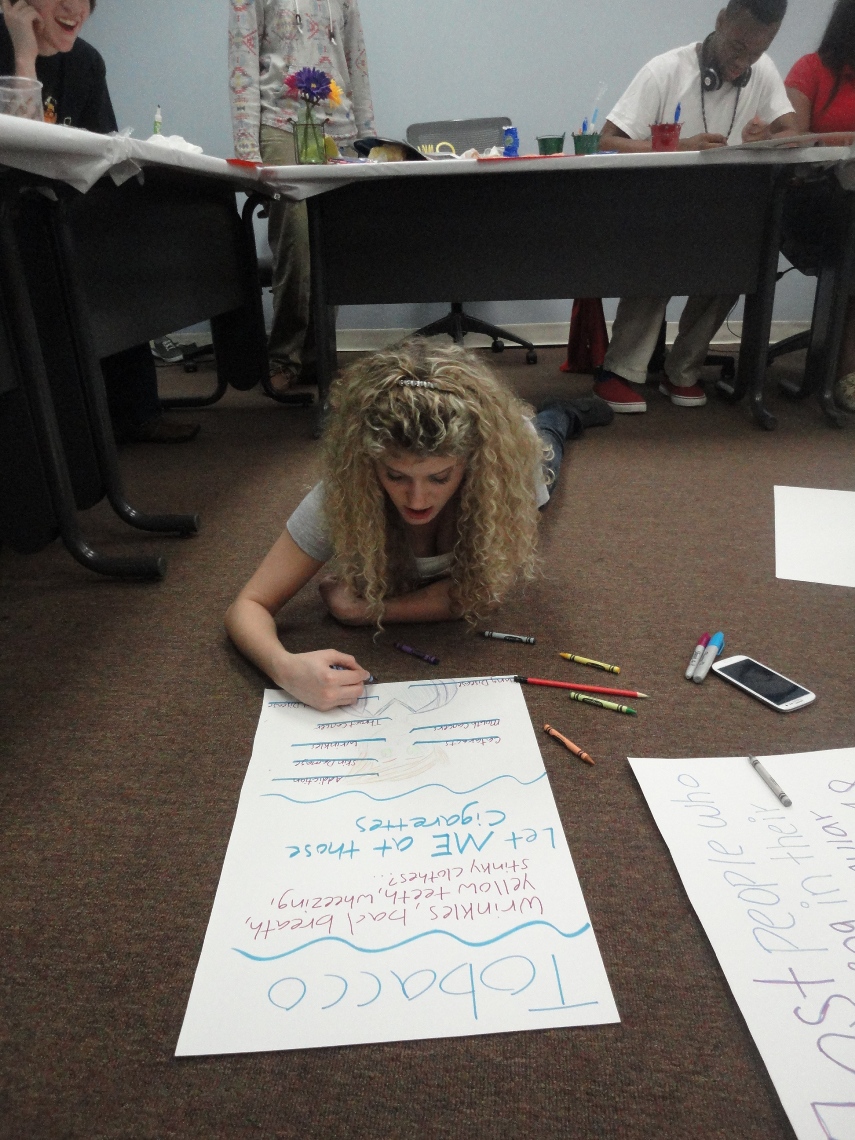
DREAM's, MS Student Advisory Board of Youth Highway Safety NDFW 2013

Mississippi High School Students participate in NDFW 2013 events.